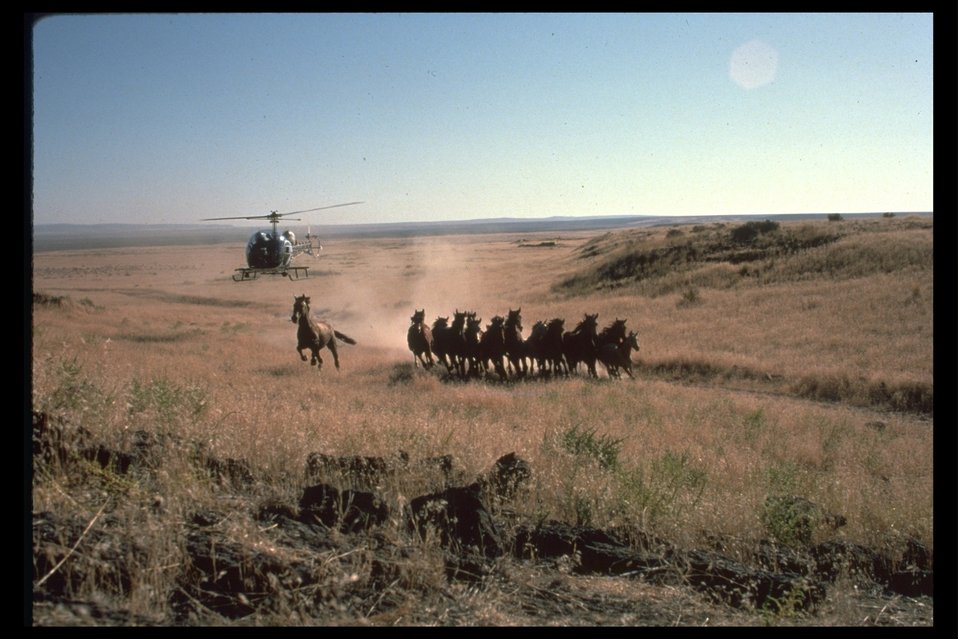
Helicopter moving horses to trap.